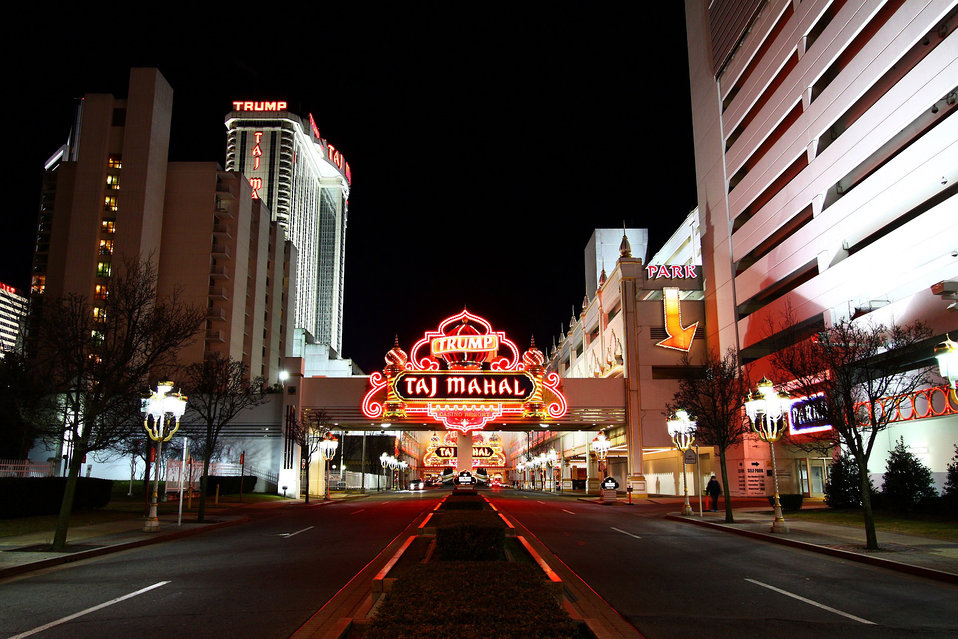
Atlantic city nj

Taj mahal casino main entrance.